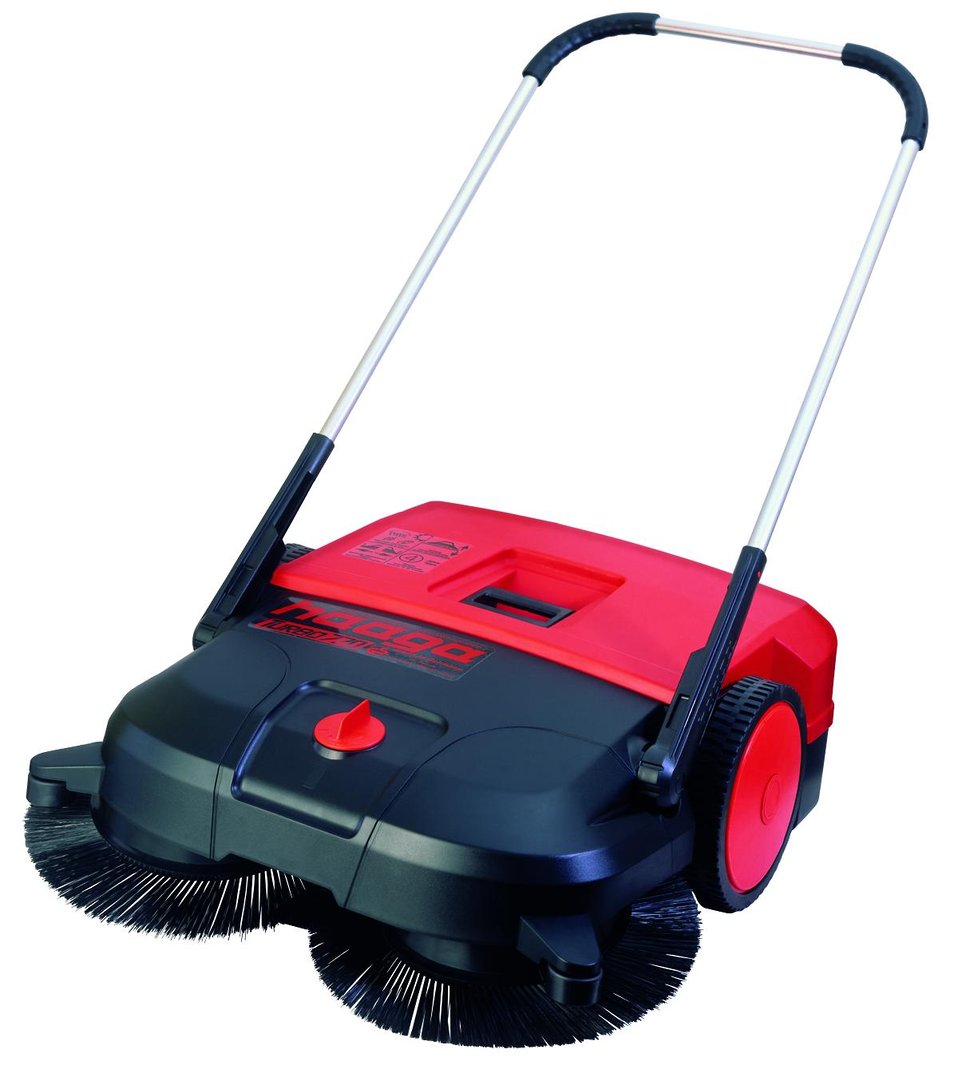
Haaga Turbo 770 Svenska: Sopmaskin.